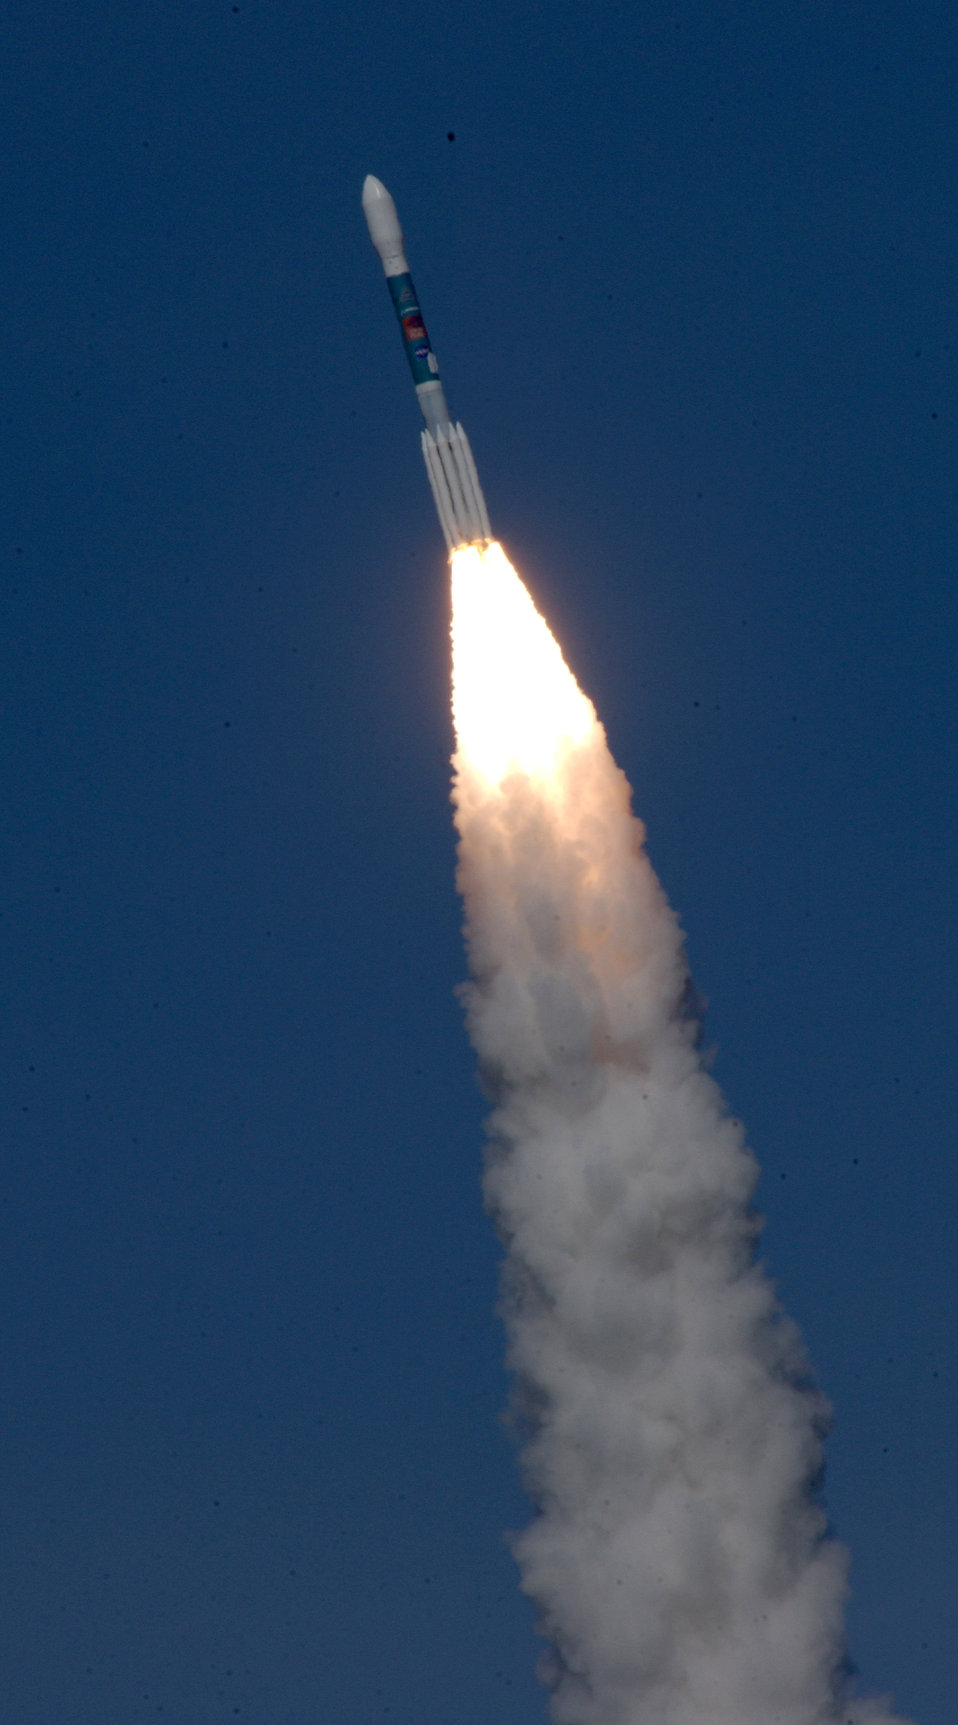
Experiment testing Einstein's theory

VANDENBERG AIR FORCE BASE, Calif. -- A Delta II rocket launched from here April 20. The rocket carried the Gravity Probe-B experiment, a project between NASA and Stanford University to test Einstein's theory of relativity. The experiment will check tiny changes in four gyroscopes on a satellite orbiting 400 miles directly above Earth's poles. Scientists will use the experiment to measure how space and time are warped by Earth's presence.